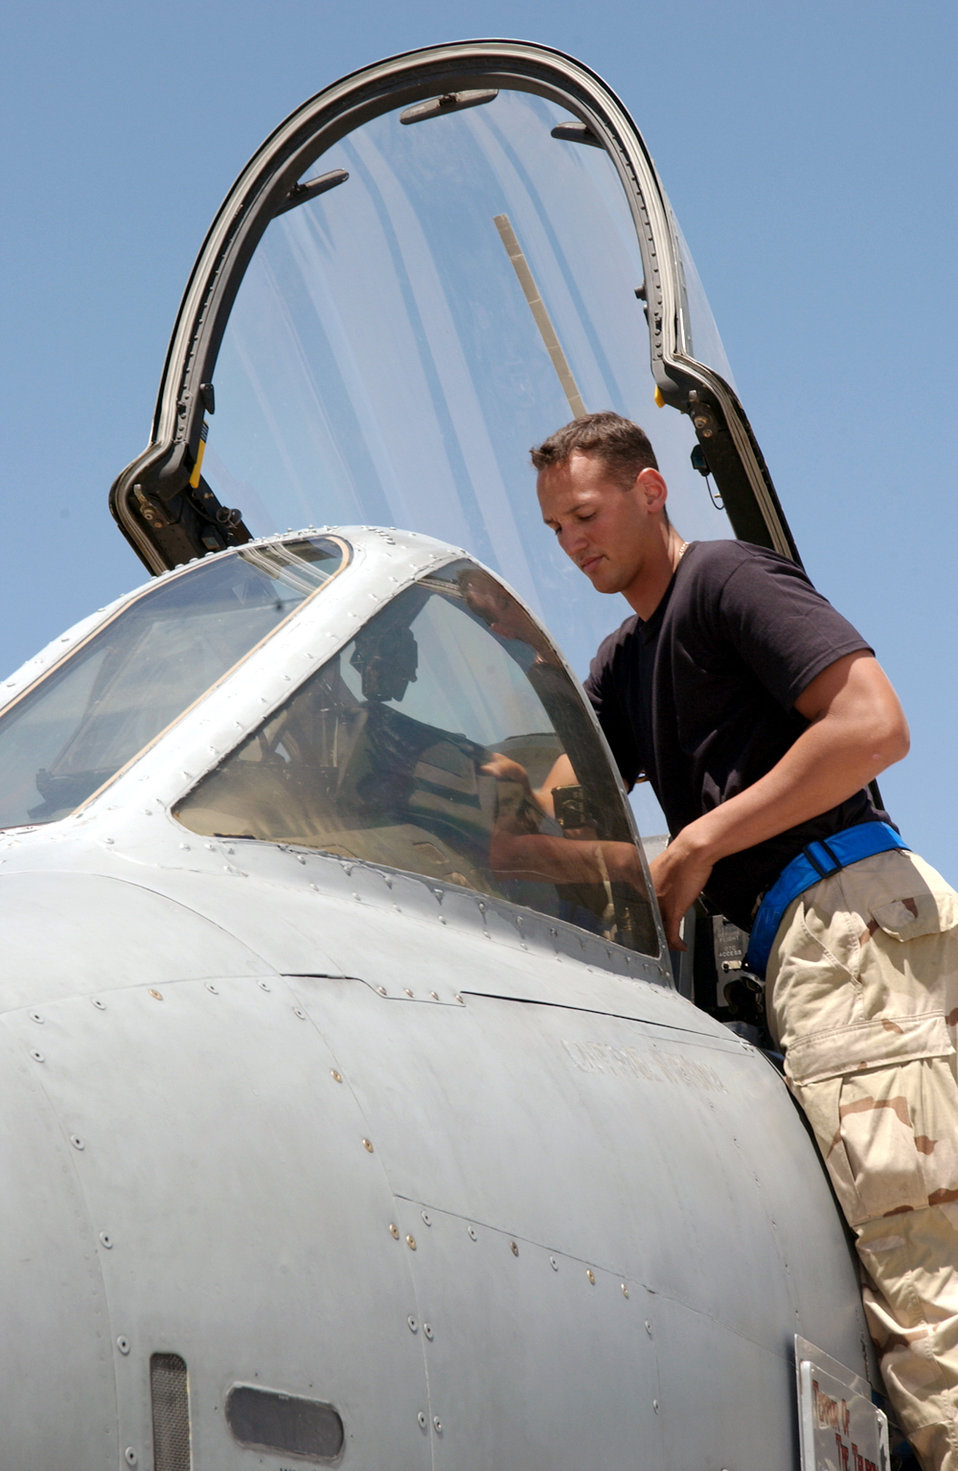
Feeding the Warthog

BAGRAM AIR BASE, Afghanistan -- Airman 1st Class Jesus Rodriguez prepares an A-10 Thunderbolt II for takeoff, just before a pilot gets into the aircraft. Airman Rodriguez is a 455th Expeditionary Aircraft Maintenance Squadron crew chief.